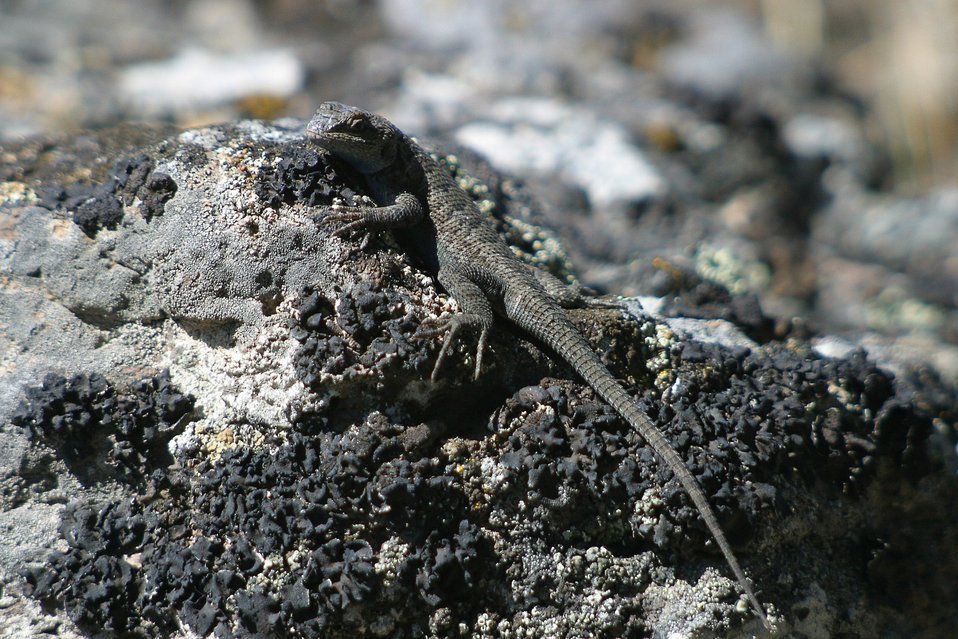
Western Fence Lizard in the Kiger Wild Horse Viewing Area. The Western Fence Lizard is distributed throughout eastern Oregon, southwest Idaho, all of Nevada, western Utah, Southern California, and northwestern Baja California.